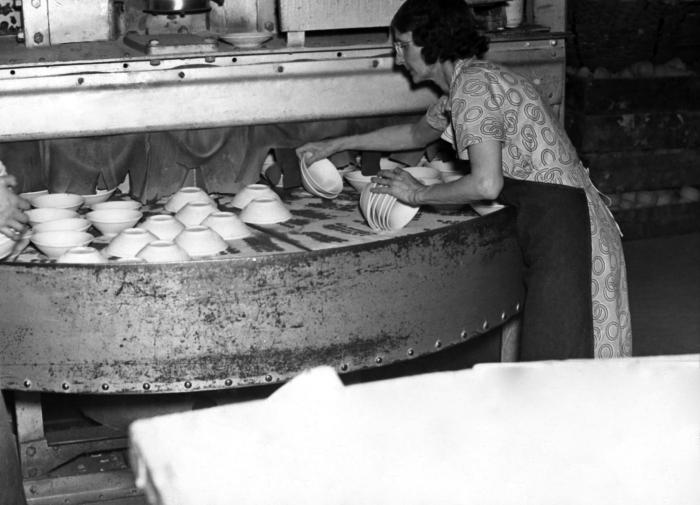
This historical image, which was provided by the Center for Disease Control's (CDC), National Institute for Occupational Safety and Health (NIOSH), depicted a West Virginia ceramics industry worker as she was operating a tableware sandblasting machine inside a factory manufacturing facility. Note that the woman was not wearing a protective breathing mask. Workers should have taken precautions against the possibility of inhaling airborne particulates, which would lead to the chronic pulmonary disease known as pneumoconiosis, or silicosis, or more commonly known as 'grinders' disease', characterized by the formation of nodular fibrotic changes in the lungs. The image was published in the 'Public Health Bulletin', No. 244, 1939.